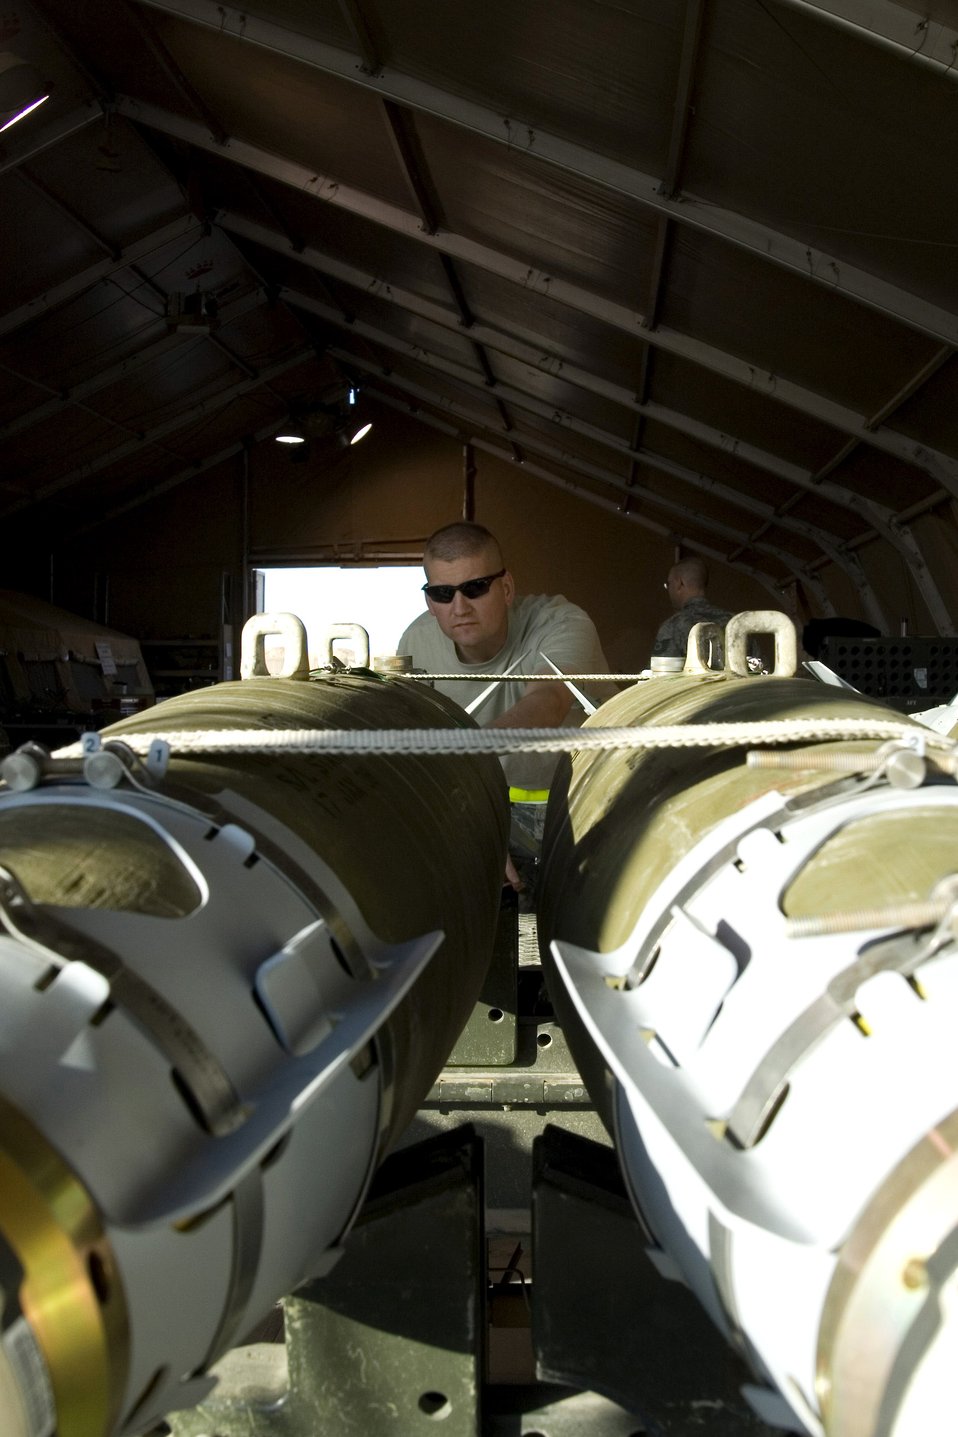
Ammo keeps fighters supplied in quest for Iraqi freedom

Master Sgt. Dave Jamison performs final inspections on munitions before delivering them to the flightline Jan. 17 at Balad Air Base, Iraq. Munitions targeting is a deliberate, finite and refined process with strict and exact rules of engagement. Sergeant Jamison is a 332nd Expeditionary Maintenance Squadron noncommissioned officer in charge of conventional maintenance and deployed from Spangdahlem Air Base, Germany.